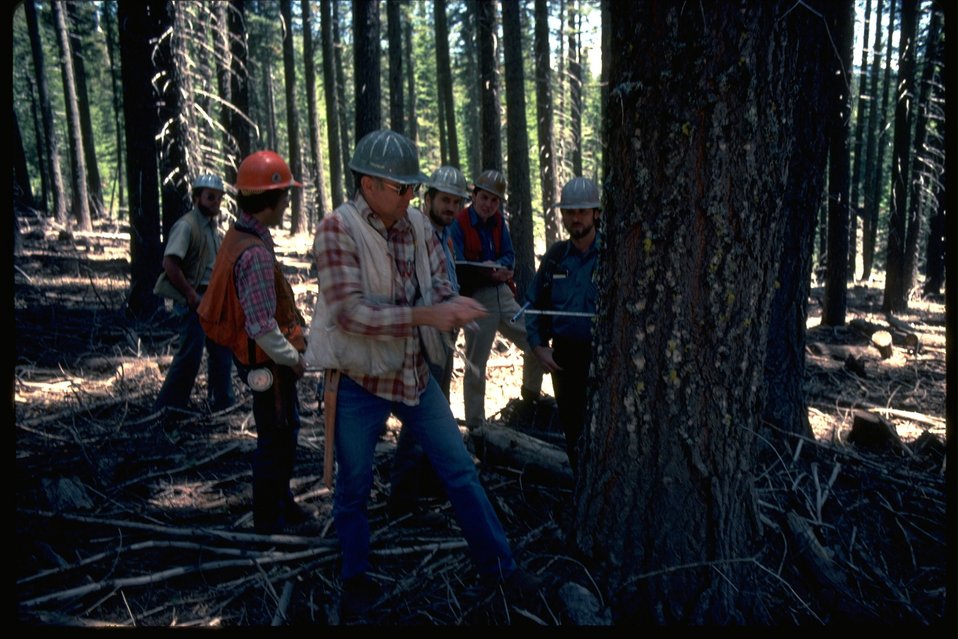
Foresters are boring a tree.